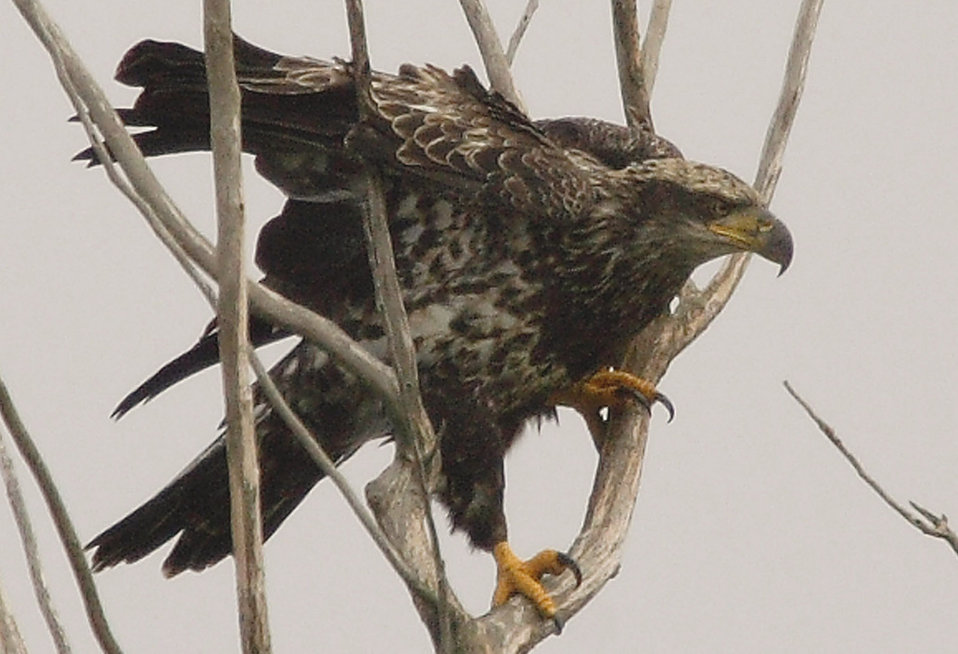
Immature bald eagle at John Heinz National Wildlife Refuge in Philadelphia, Pennsylvania.